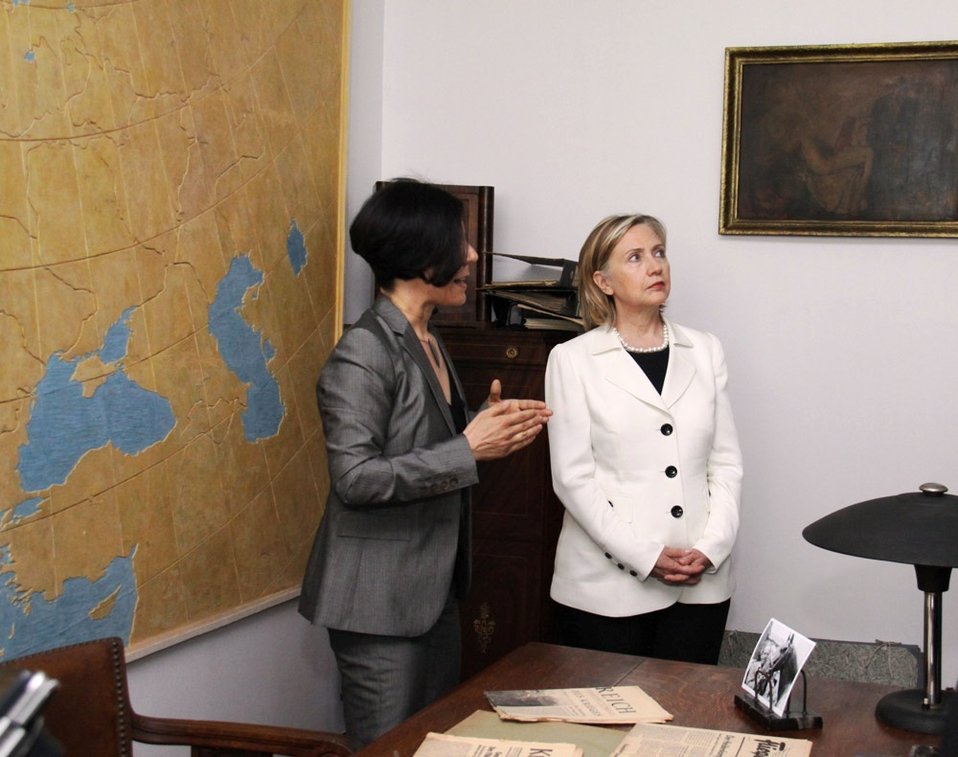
Secretary Clinton Listens to Dr. Edyta Gawron on the Schindler Factory Museum Tour

U.S. Secretary of State Hillary Rodham Clinton listens to the guide, Dr. Edyta Gawron, as he discusses Oskar Schindler’s office during a tour of the Schindler Factory Museum in Krakow, Poland, on July 3, 2010.